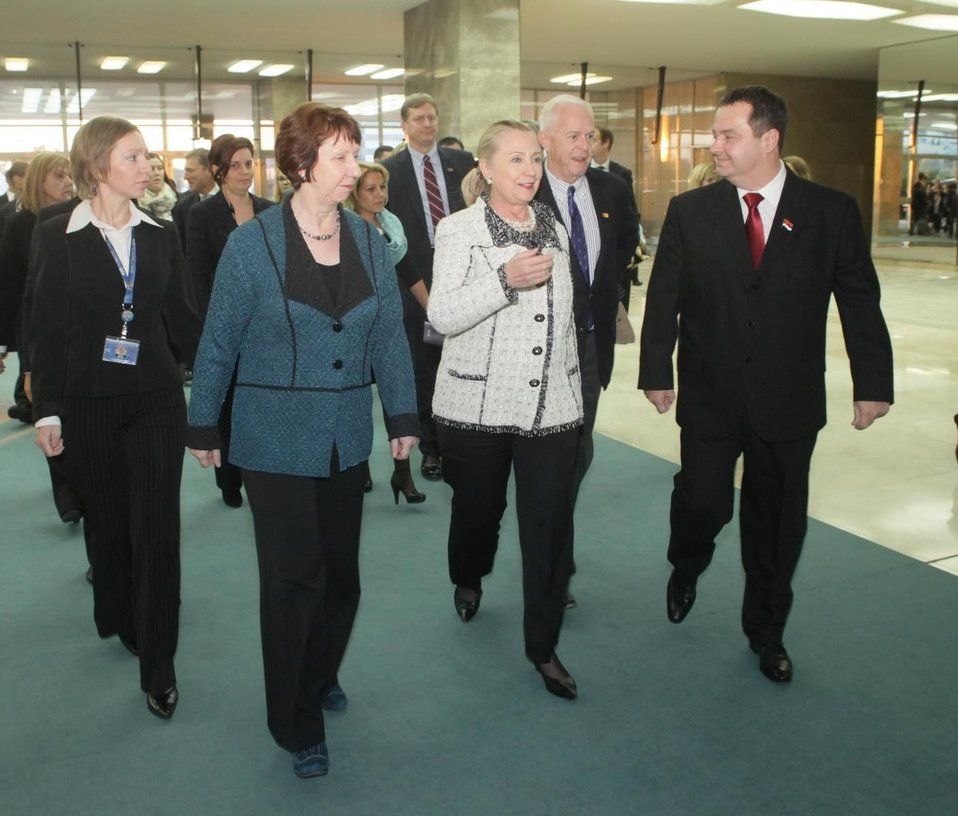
Secretary Clinton, EU High Representative Ashton and Serbian Prime Minister Dačić Arrive at the Palace of Serbia

U.S. Secretary of State Hillary Rodham Clinton, EU High Representative Catherine Ashton, and Serbian Prime Minister Ivica Dačić arrive at the Palace of Serbia, Belgrade, October 30, 2012. [FoNet photo]